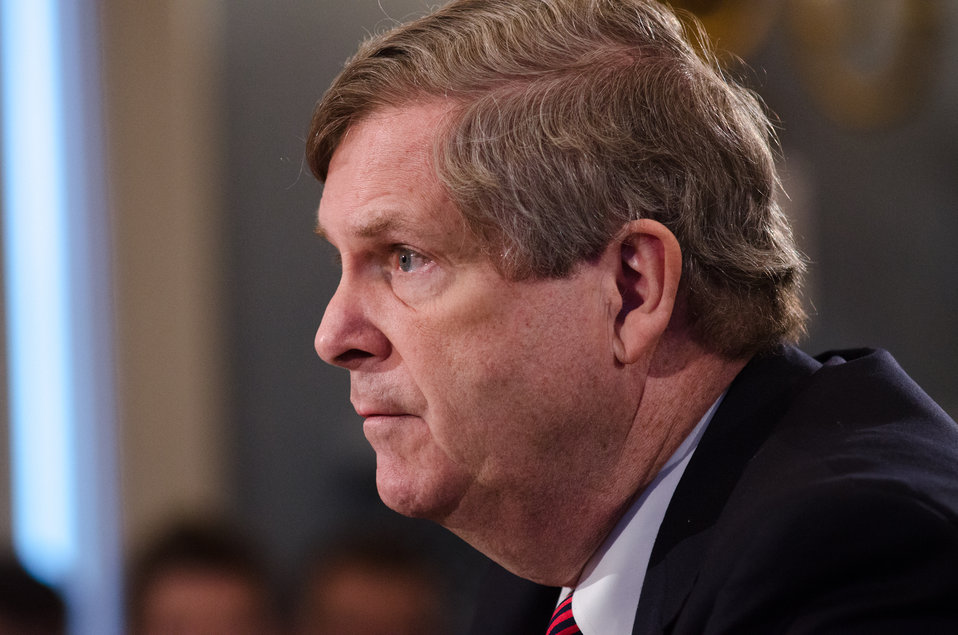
Agriculture Secretary Tom Vilsack testifies before the House Agriculture Committee regarding the “State of the Rural Economy“ at the Longworth House Office Building in Washington, D.C. on Tuesday, Mar. 5, 2013.